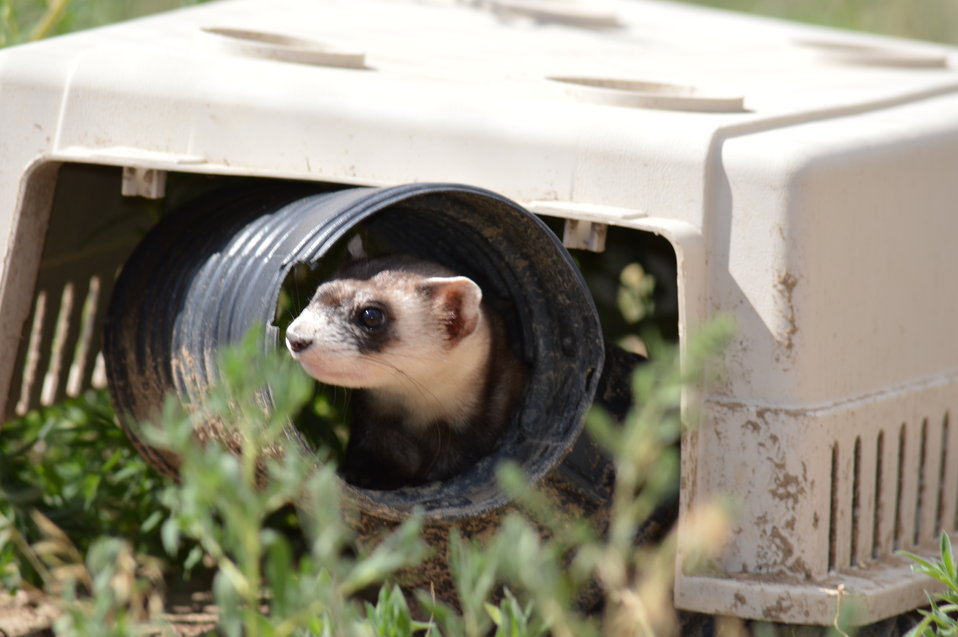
Interns visit the NBFFCC

In the summer of 2012, USFWS Region 6 interns visited the National Black-footed Ferret Conservation Center (NBFFCC) in Colorado to learn how the program reintroduces the endangered Black-footed ferret back into its native habitat.